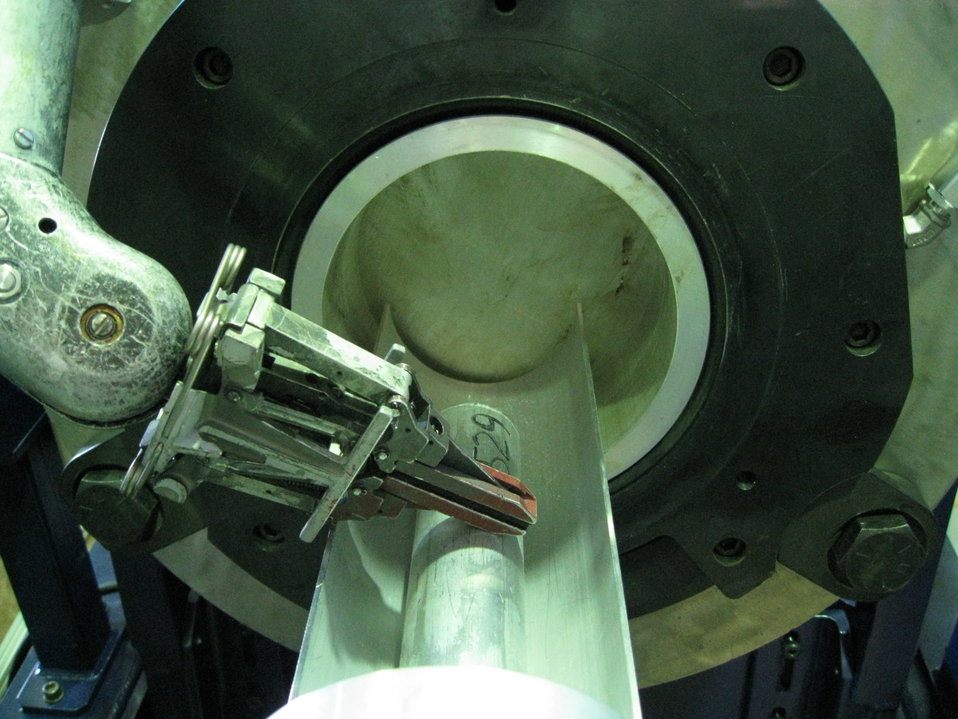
Argonne Forges Ahead in Waste Removal, Facility Demolitions with Recovery Act Help

A canister of irradiated sodium-bonded nuclear fuel specimens from Argonne’s Alpha Gamma Hot Cell Facility is lowered onto a shipping cask for shipment to Idaho National Laboratory.